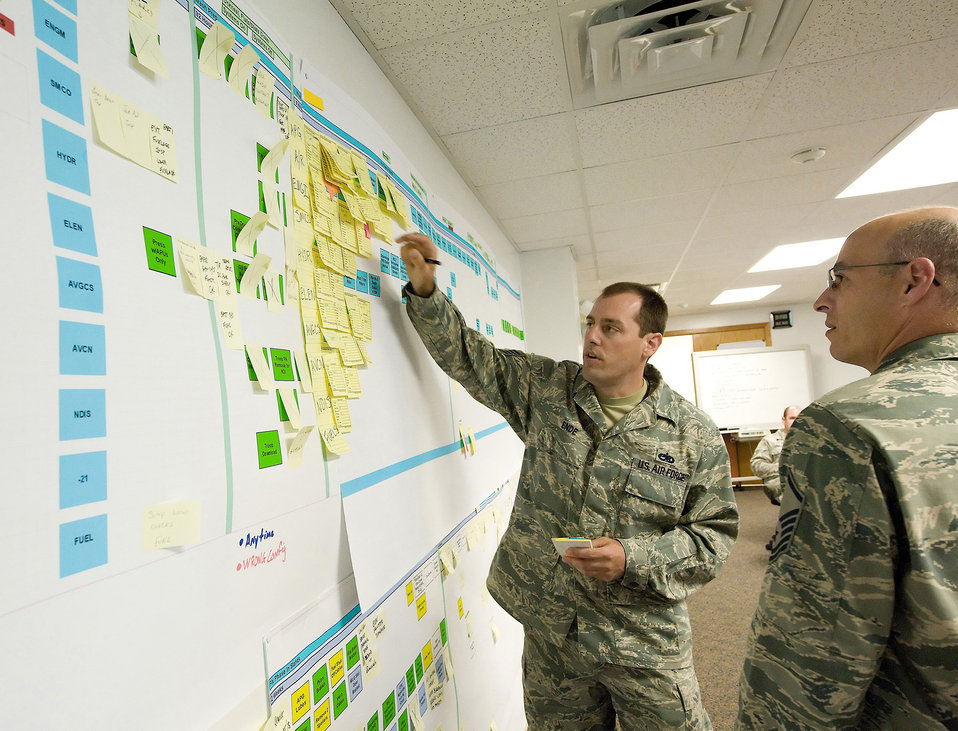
New total force C-5 inspection program saves money

Tech. Sgt. Matthew Ende goes over scheduling information during an Air Force Smart Operations for the 21st century rapid improvement event. The RIE helped layout a new inspection schedule for C-5 Galaxy aircraft. Sergeant Ende is assigned to the 436th Maintenance Squadron.